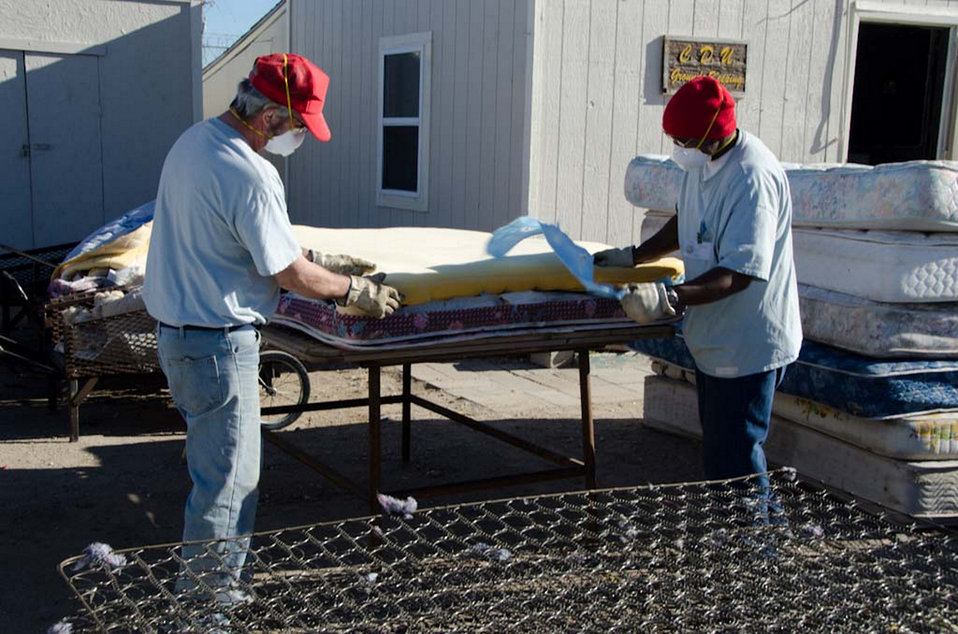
January 5, 2012 Inmates at the Hutchinson, Kan., Correctional Facility disassemble a mattress for recycling

Cotton and bedsprings are baled and sent off site. The wood is used to create furniture and the mattress material is used to make quilts. The prison facility was honored by EPA for reducing its volume of solid waste through innovative and aggressive recycling programs. EPA presented a WasteWise State Government Partner of the Year Award to the correctional facility on January 18, 2012.

EPA Region 7 more locally serves Iowa, Kansas, Missouri, Nebraska and nine tribal nations.